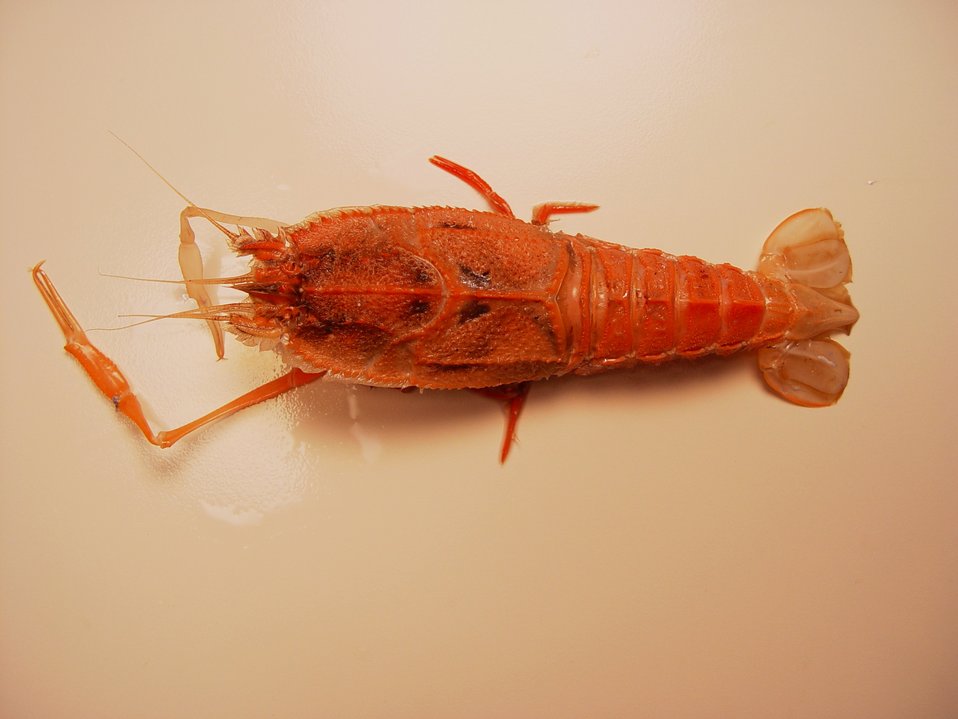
The blind lobster (Polycheles sculptus ; Synonym: Stereomastis sculpta )